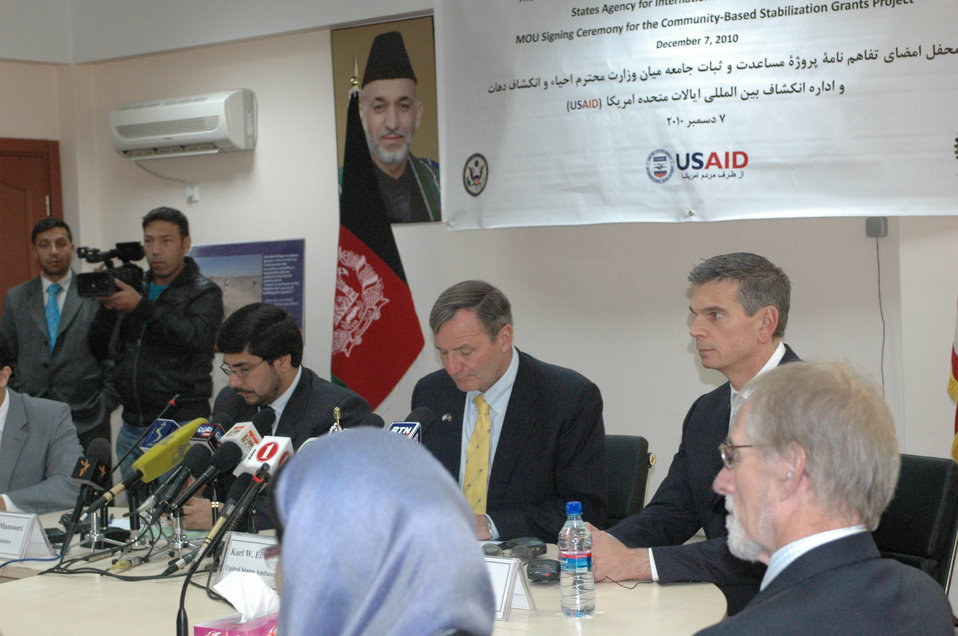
Community Based Stabilization Grants Ceremony, December 7, 2010